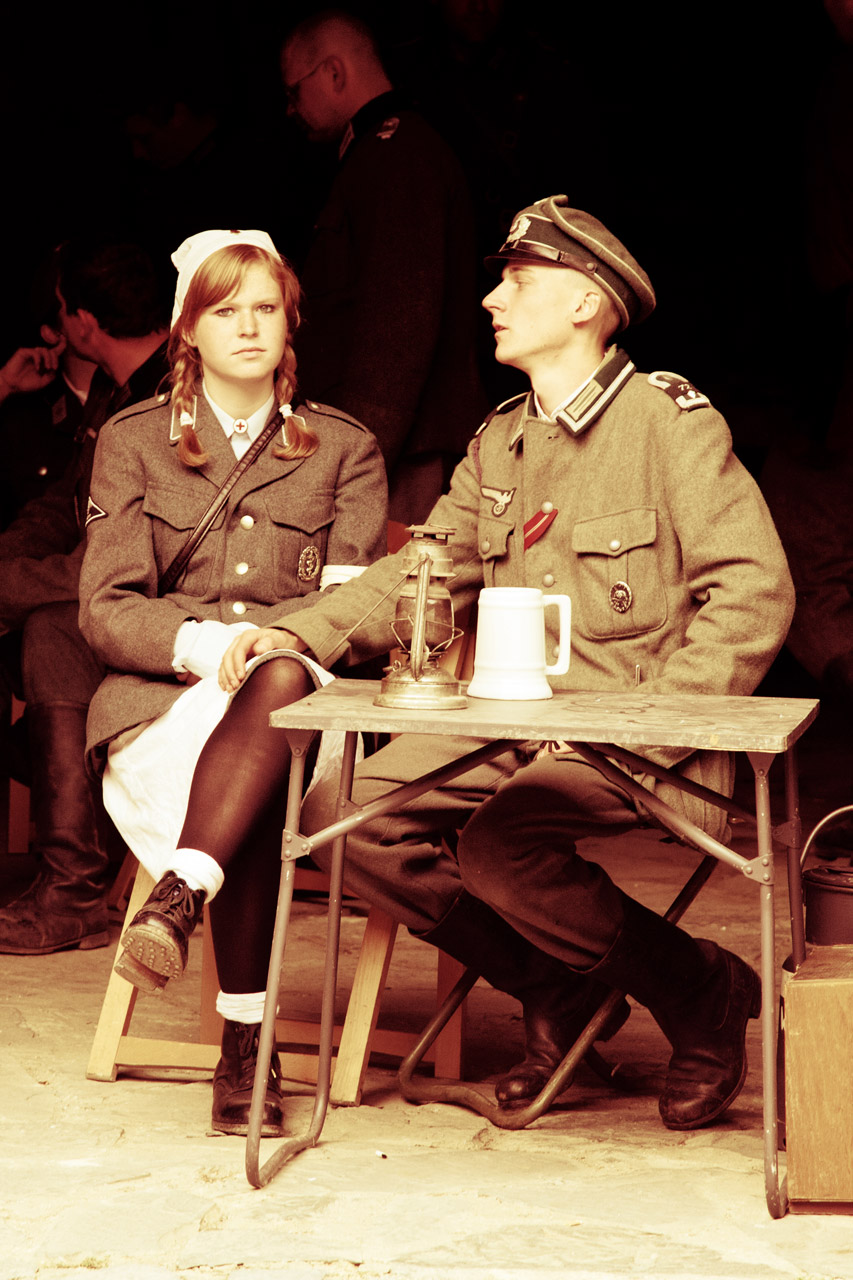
Soldier and nurse

World war 2 soldier talking to the nurse.